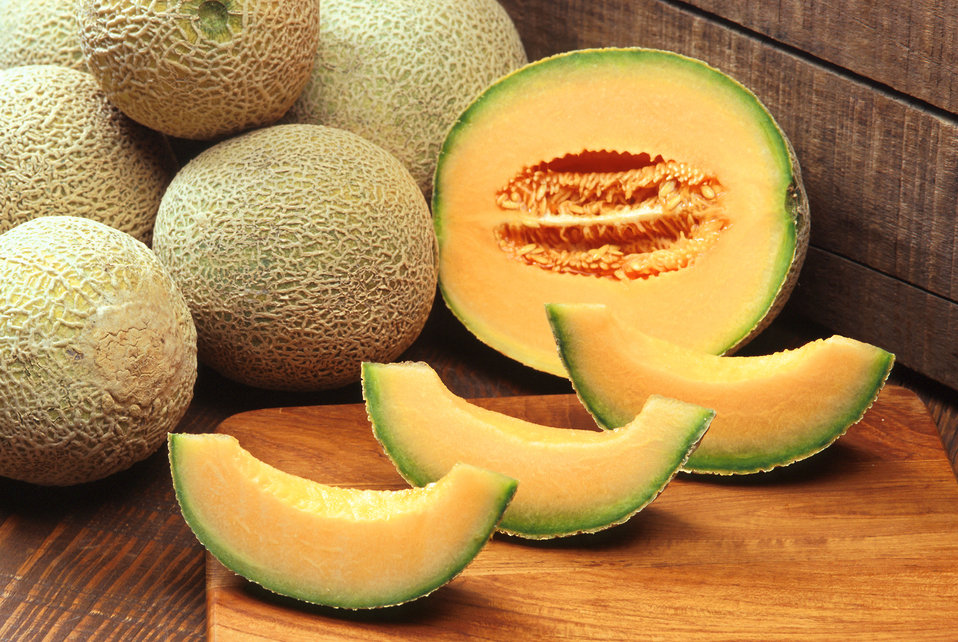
Cantaloupes, sometimes called muskmelons.